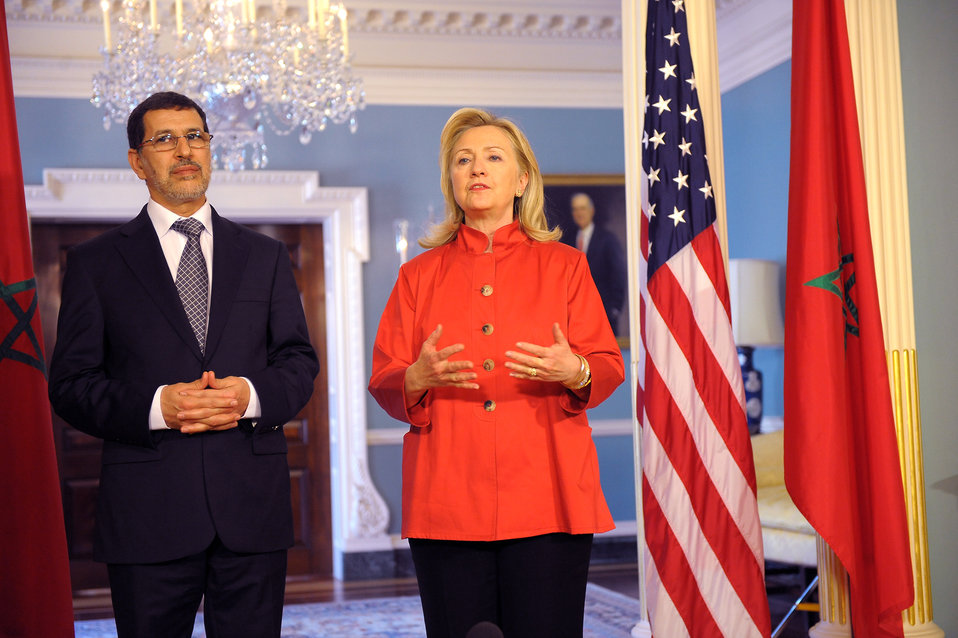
Secretary Clinton Meets With Foreign Minister Al-Othmani of Morocco

U.S. Secretary of State Hillary Rodham Clinton meets with Foreign Minister Saad-Eddine Al-Othmani of Morocco at the Department of State in Washington, D.C. on March 15, 2012.